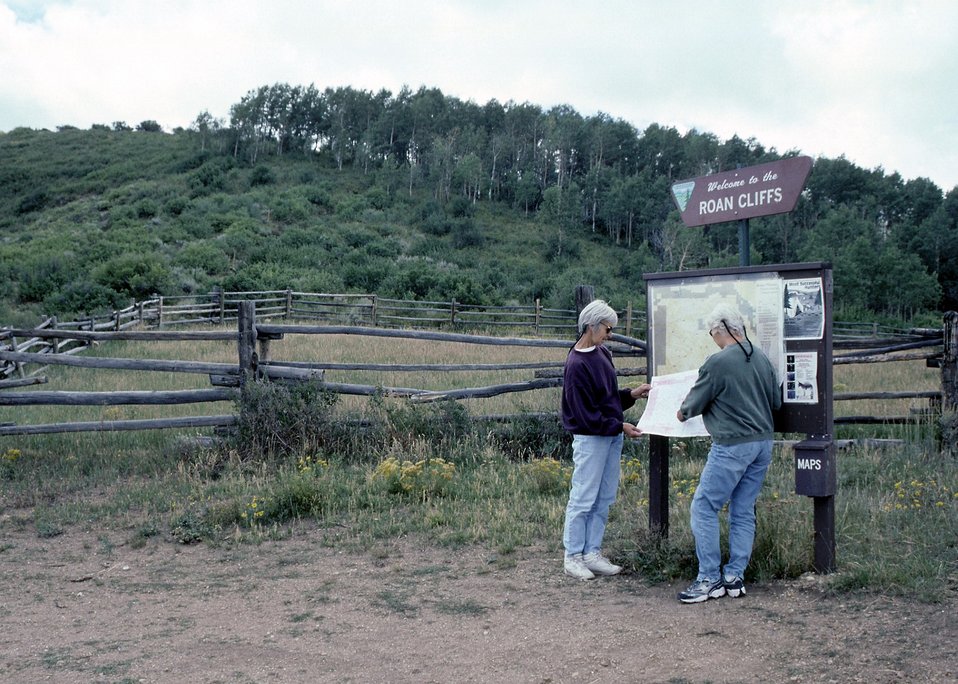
Over looking bulletin board